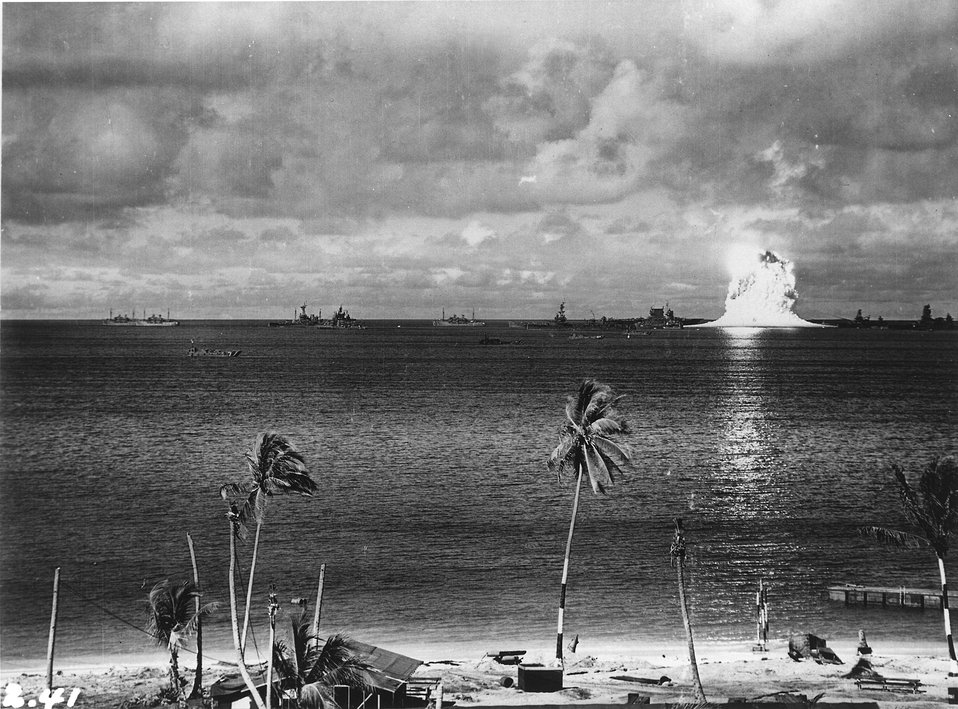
The spray following the Baker explosion.